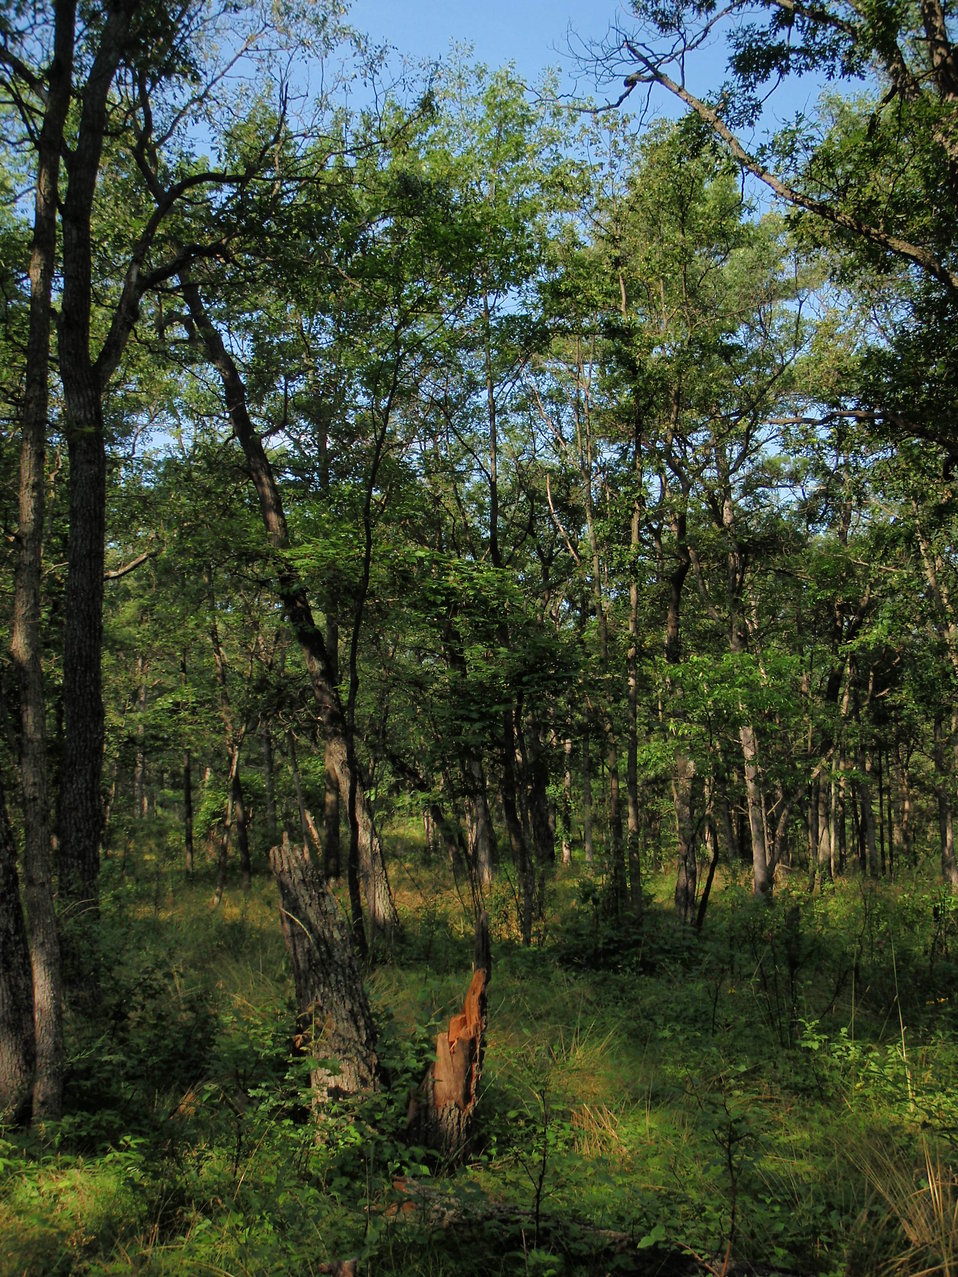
Pinery Provincial Park